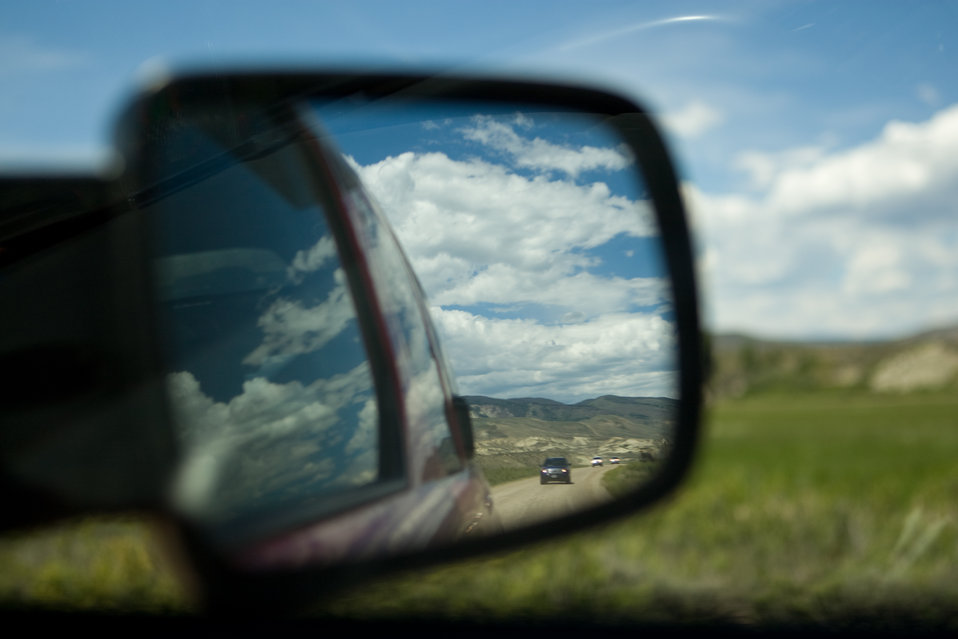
Colorado Rare Plant Conservation Initiative

The Colorado Rare Plant Conservation Initiative (RPCI) is a partnership of 23 statewide and regional agencies, private organizations, and academic institutions working to conserve 121 rare plants in Colorado. As part of these efforts the group developed the Colorado Rare Plant Conservation Strategy, developed Best Management Practices to reduce energy development impacts, addressed climate change, and developed focused strategies for the conservation of individual species at eight priority landscapes. The group has also worked to coordinate volunteer efforts for plant conservation across the state.